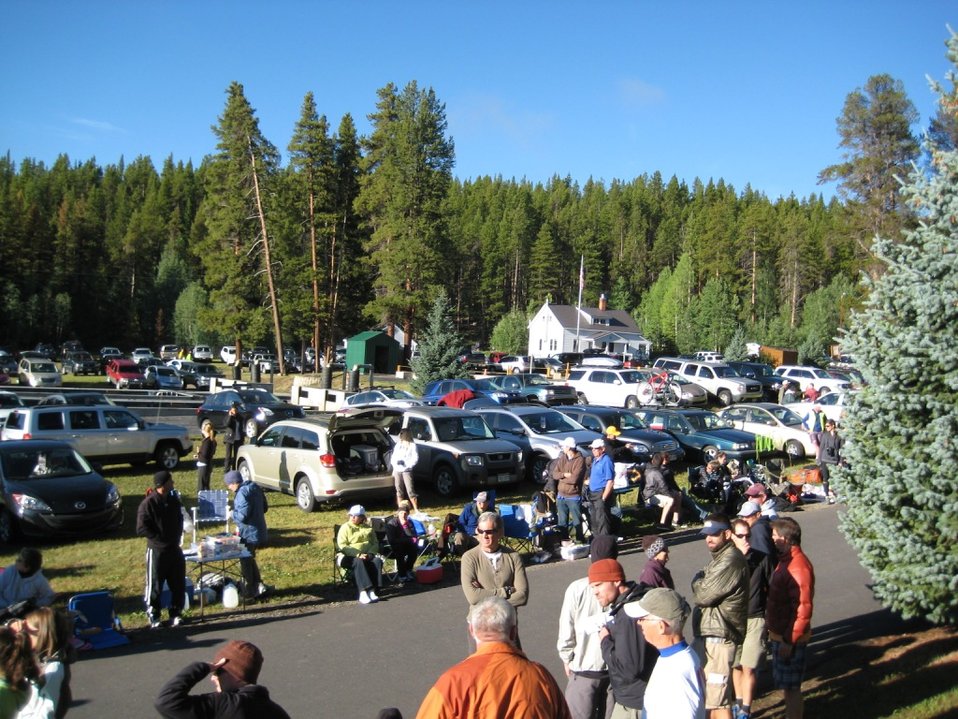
Leadville National Fish Hatchery Filled with Cars and People

Leadville National Fish Hatchery was a busy place for the Leadville Trail 100 run.